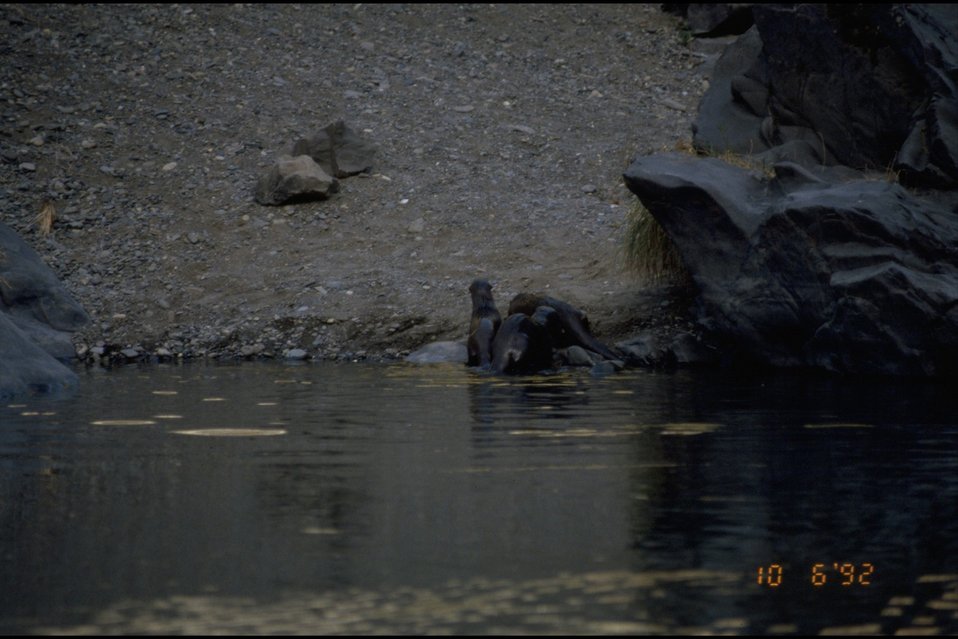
Rogue River, wild section. River Otter.